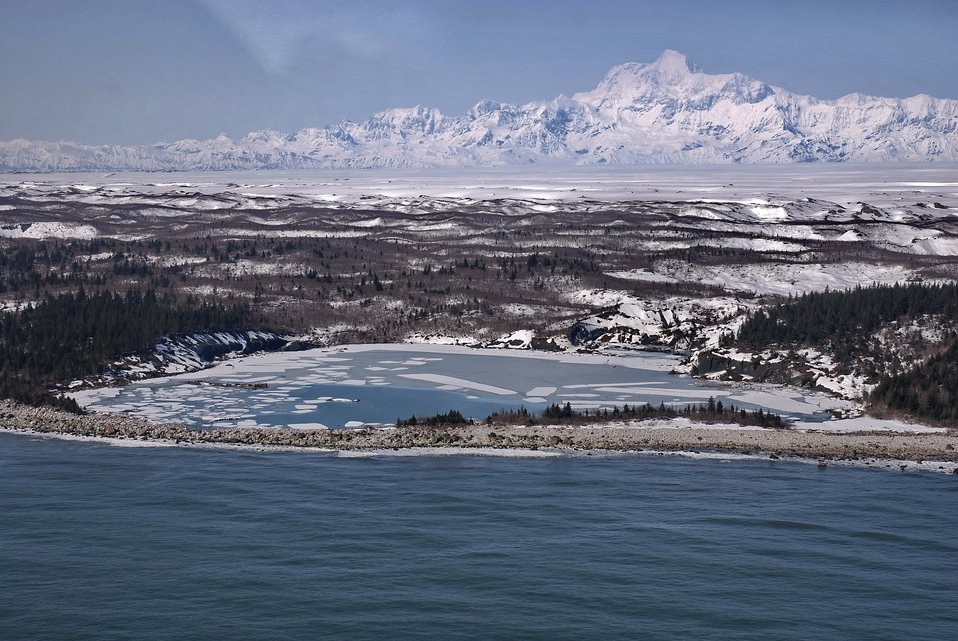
Mt. St. Elias seen from the south looking over the Malaspina Glacier. In the foreground are glacial moraines and a rocky beach with glacial debris.